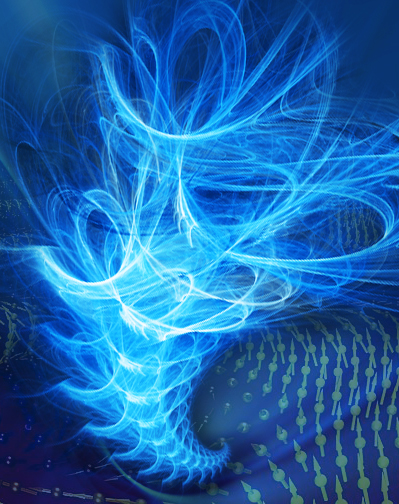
At Lawrence Berkeley National Laboratory, an impressionistics rendition of helimagnetism, which can arise if a material's crystal structure forces the spins of itinerant electrons to precess collectively.